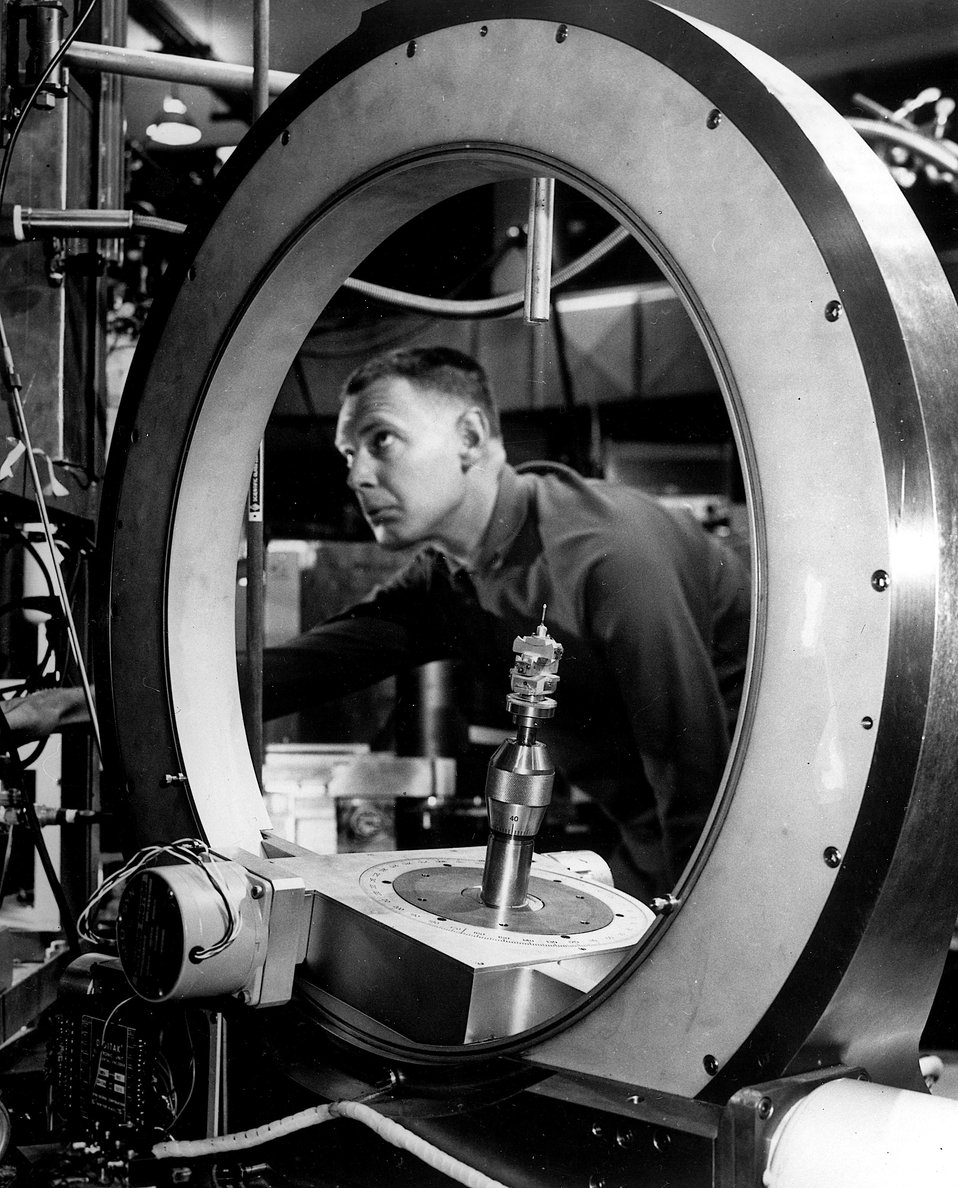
This single crystal gonicmeter is used for structural studies by neutron diffraction at Brookhaven's High Flux Beam Research Reactor.